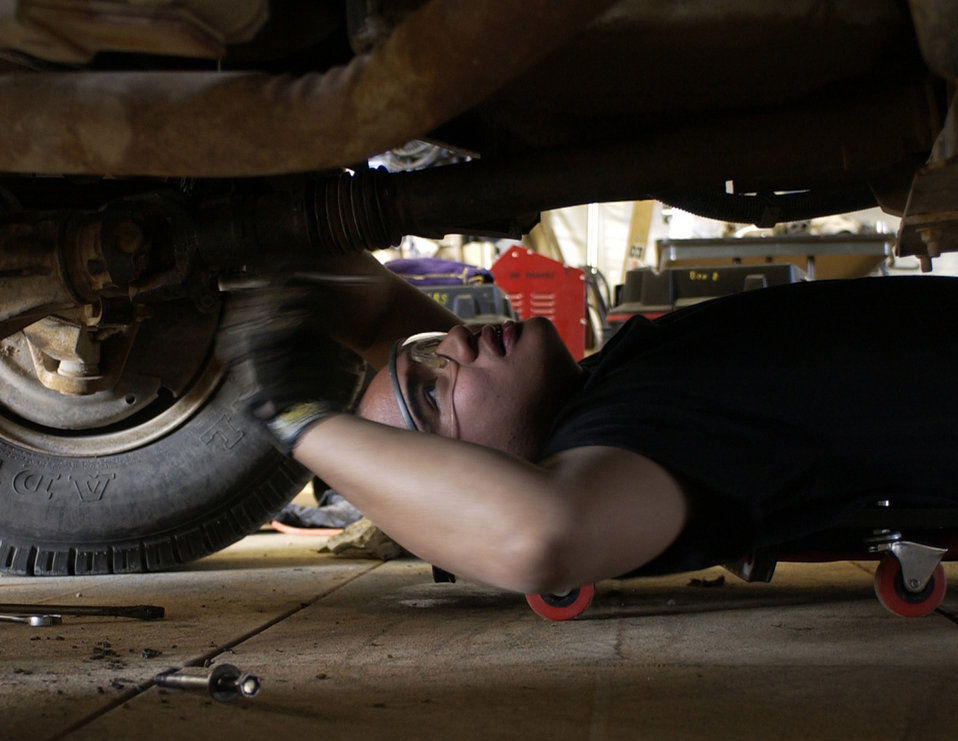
New starter

OPERATION IRAQI FREEDOM -- A vehicle maintainer with the 410th Air Expeditionary Wing replaces a starter on a pickup truck March 28 at a forward-deployed location supporting Operation Iraqi Freedom.